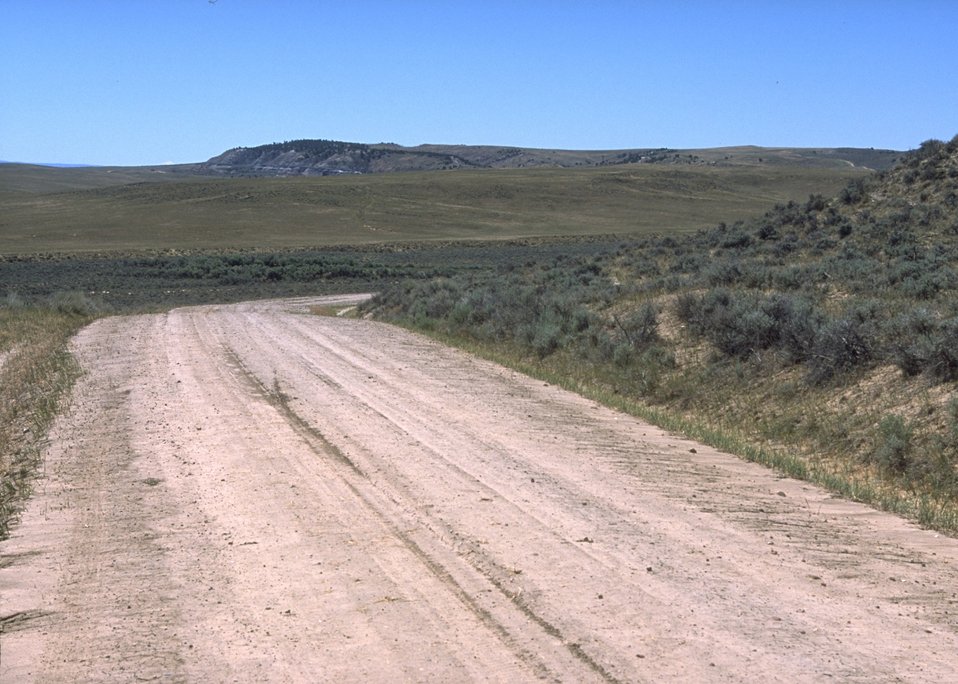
Distant view of Cedar Ridge Paleo area as it is approached coming from Worland, Worland Field Office.